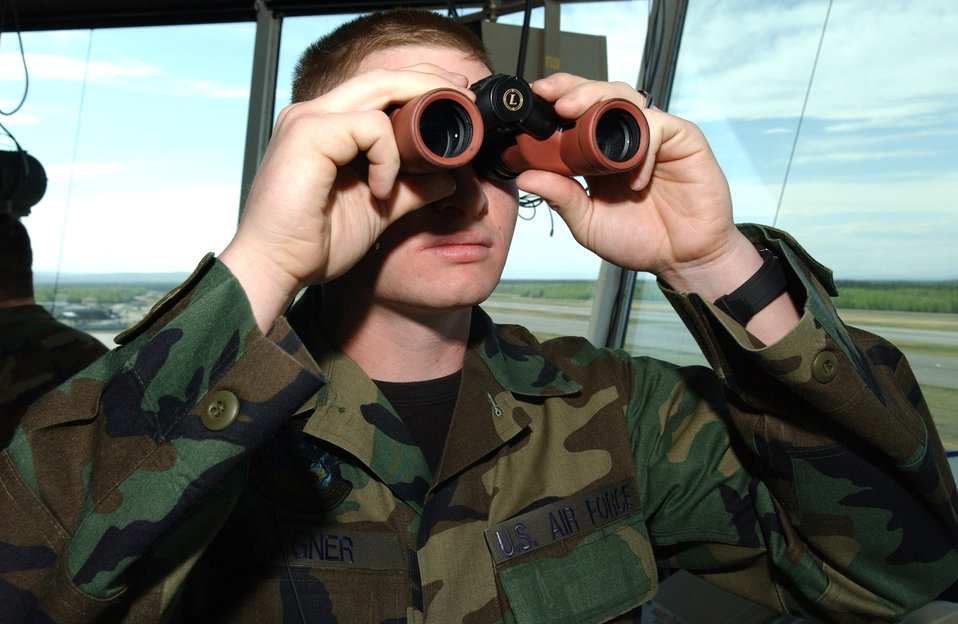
Cleared for takeoff

Airman 1st Class Kenneth Wagner, 354th Operations Support Squadron air traffic controller, checks for planes coming down the flightline at Eielson Air Force Base, Alaska, May 23. Airman Wagner is in charge of ground data.